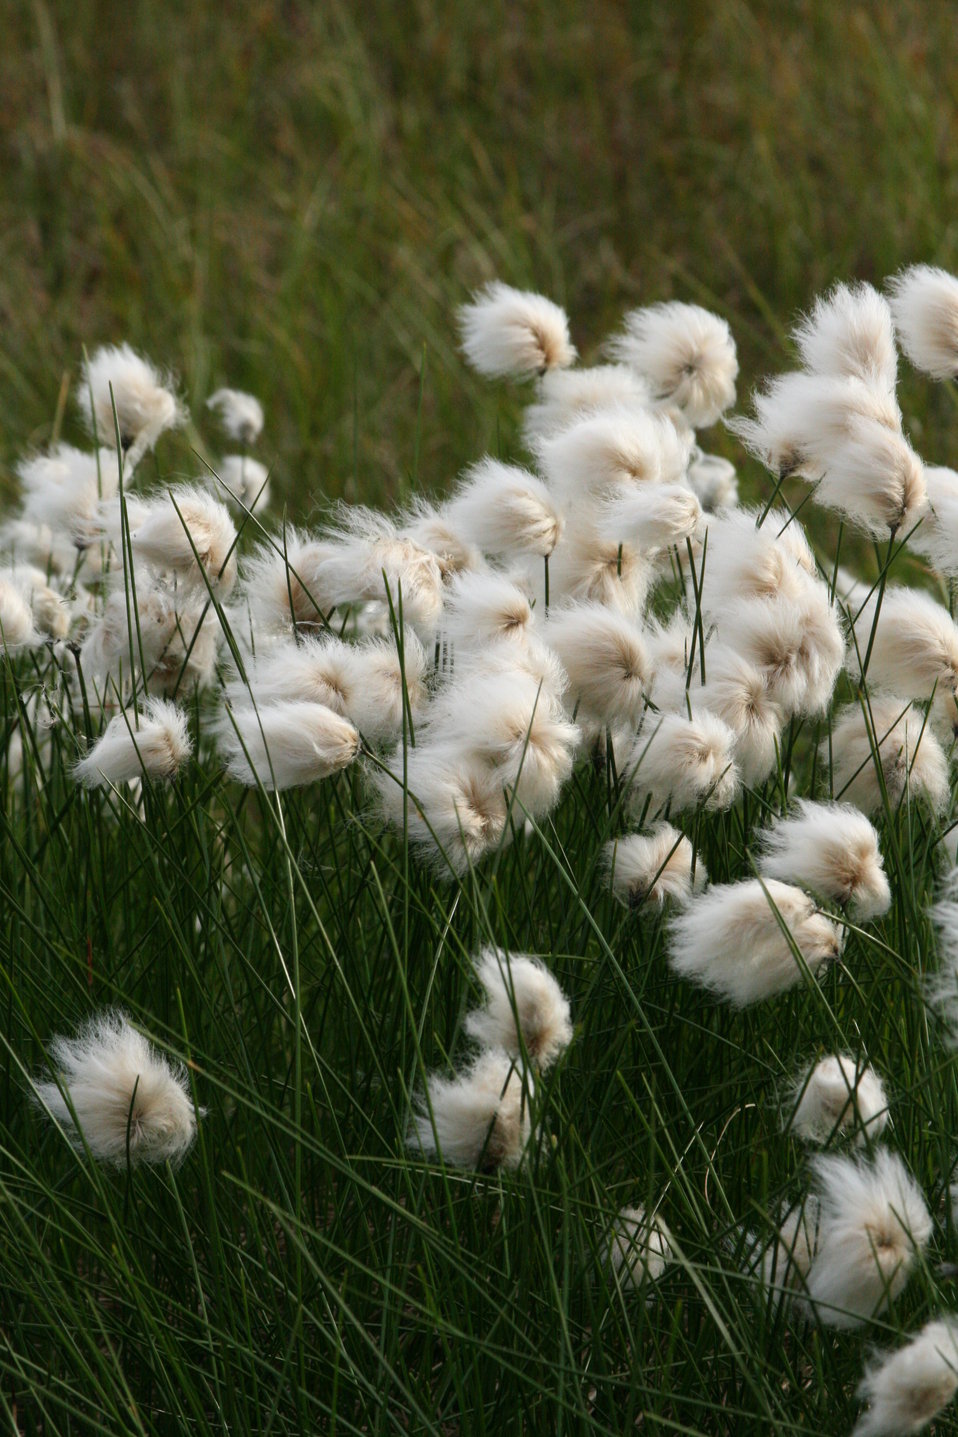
Cotton grass blowing in the wind.

USFWS Yukon Delta NWR